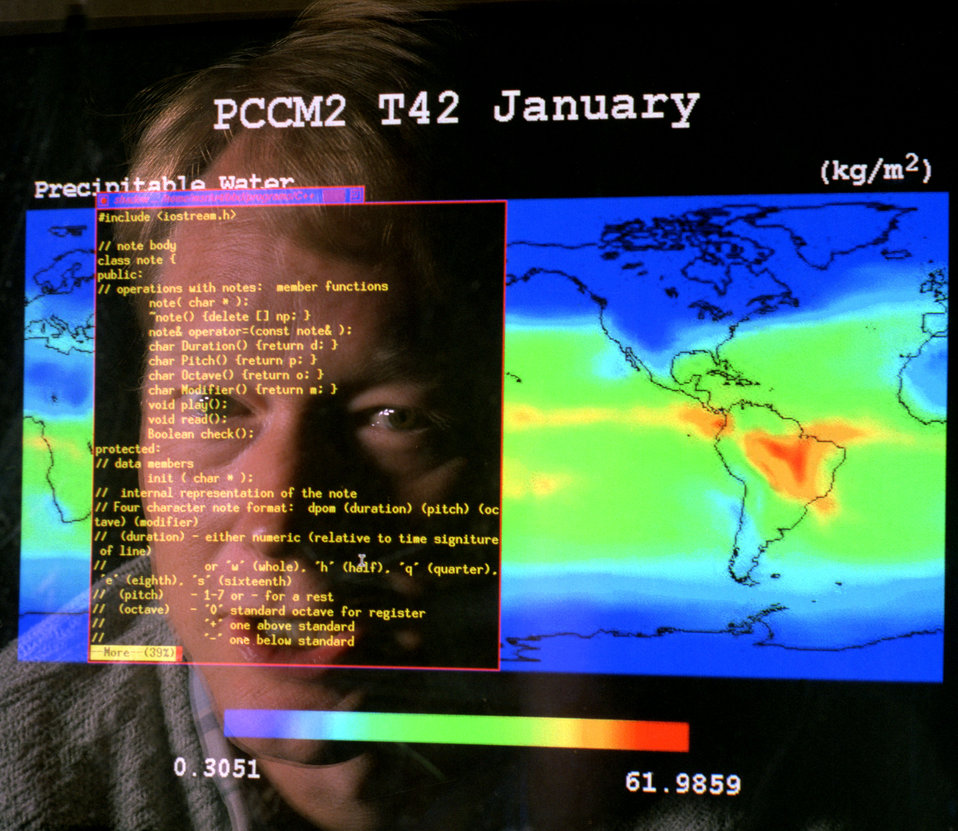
Global Climate Simulation Oak Ridge

97-349-11 DOE photo by Lynn Freeny

Global Climate Simulation Oak Ridge National Lab. Oak Ridge Tennessee 7-26-1997